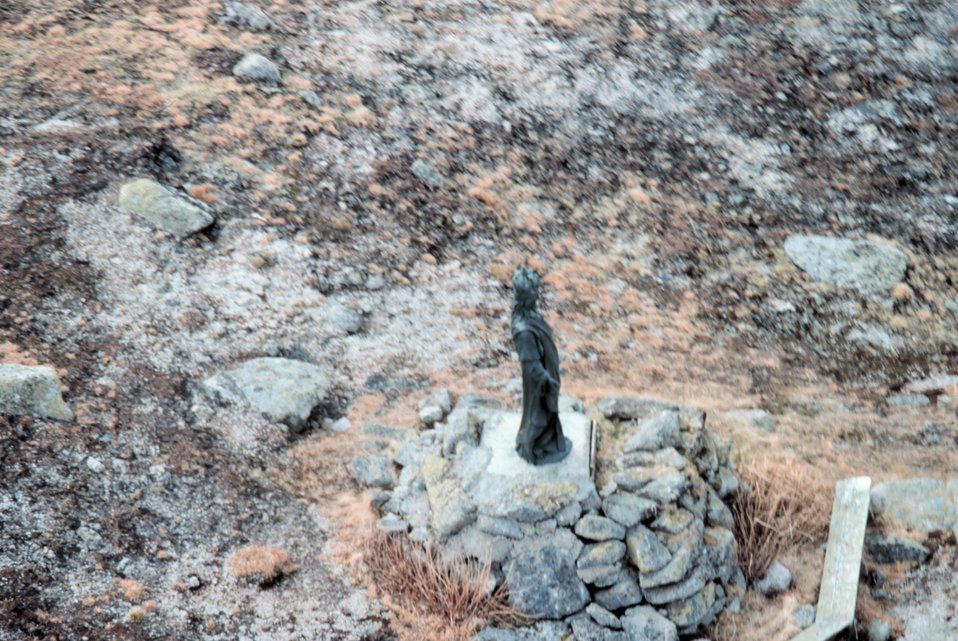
Statue of Christ the King overlooking the stilt village of Ukivok.